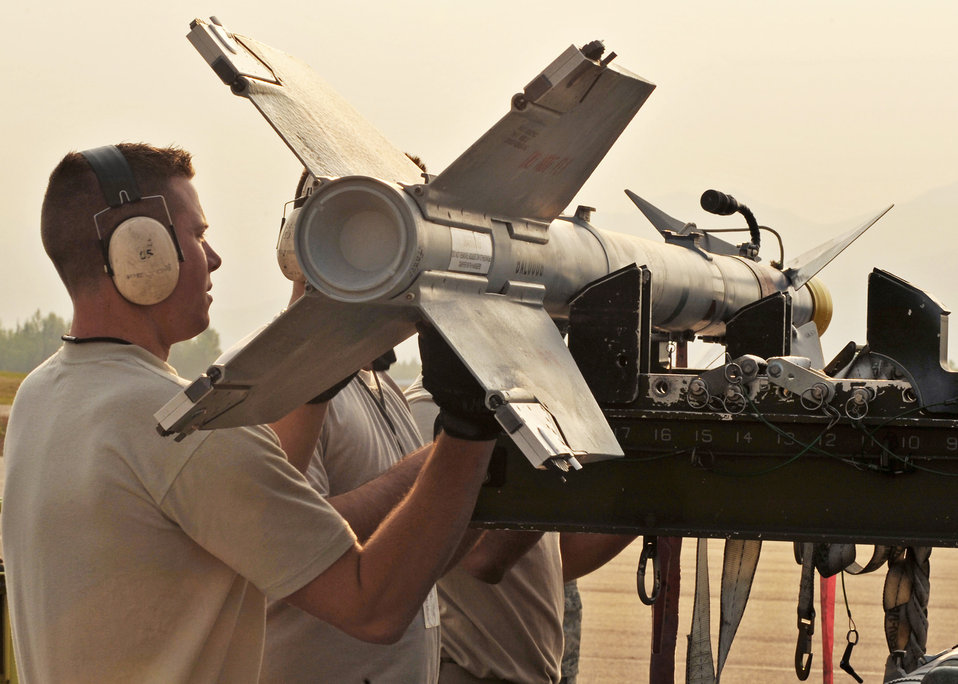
Alaskan load crews compete

Airman 1st Class Daniel Tinnel prepares to load a missile onto an F-15 Eagle during a load crew competition July 10 at Elmendorf Air Force Base, Alaska. He is with the 3rd Aircraft Maintenance Squadron.